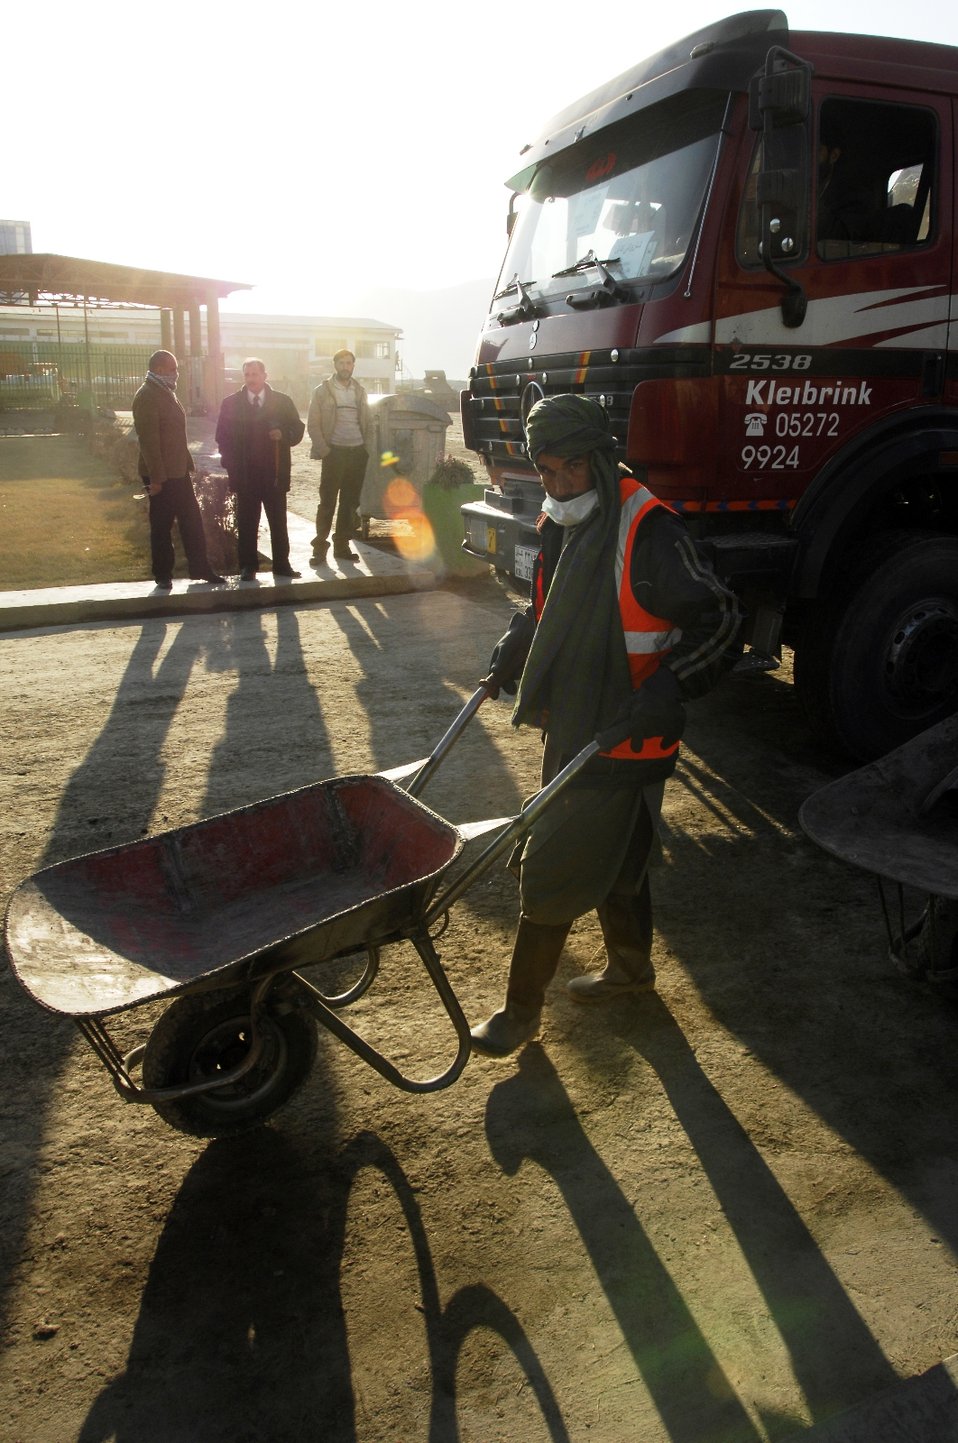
Care52